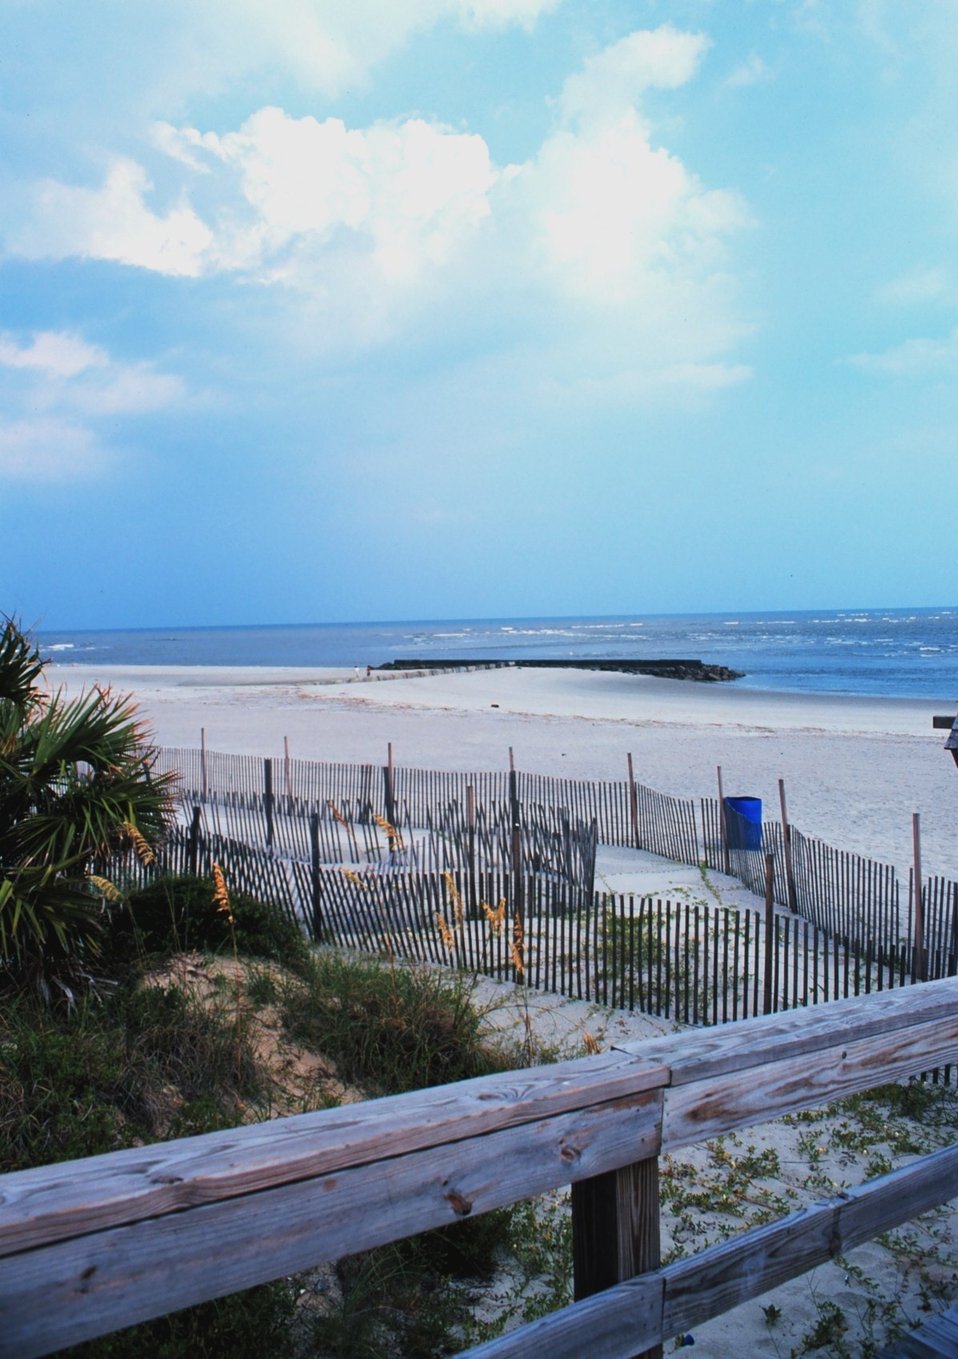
The beach at Tybee Island. Fences help reduce erosion.